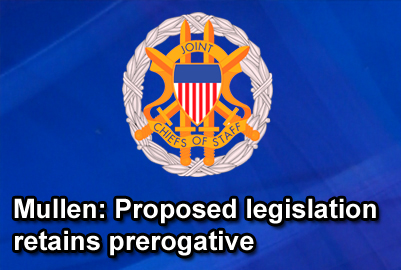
Mullen: Proposed legislation retains prerogative